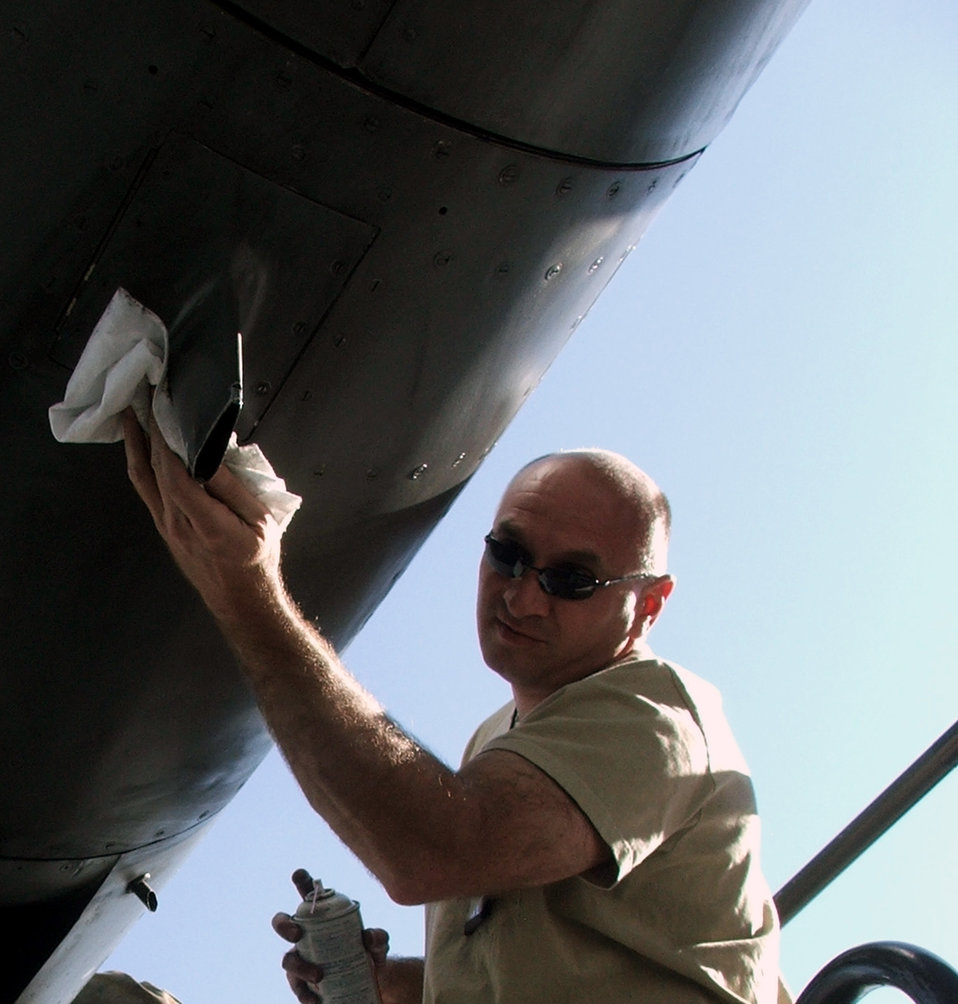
C-130 maintainers keep mission-capable rates high

KARSHI-KHANABAD AIR BASE, Uzbekistan -- Master Sgt. Joseph Ohmes wipes down an engine compartment of a C-130 Hercules after reassembling the compartment April 14. He is a C-130 engine mechanic with the 774th Expeditionary Airlift Squadron and is deployed from the Missouri Air National Guard at St. Joseph.